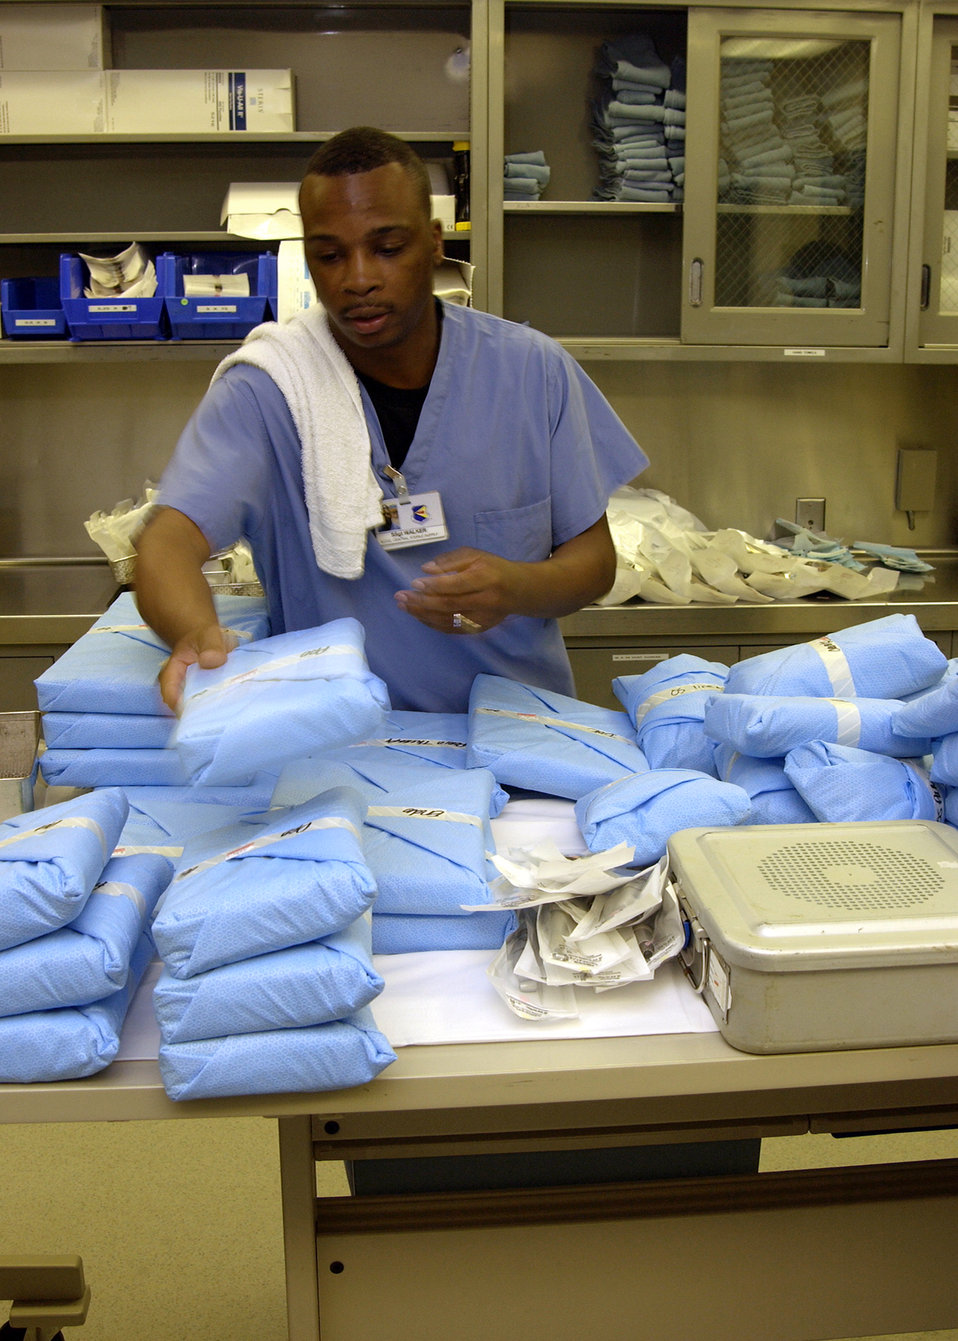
Armed to the teeth

Staff Sgt. Bobby Walker sorts dental instruments and prepares them for sterilization at Davis-Monthan Air Force Base, Ariz., on Aug. 10. The 355th Dental Squadron provides services for more than 7,000 active-duty Airmen at Davis-Monthan so that they may remain mission ready.